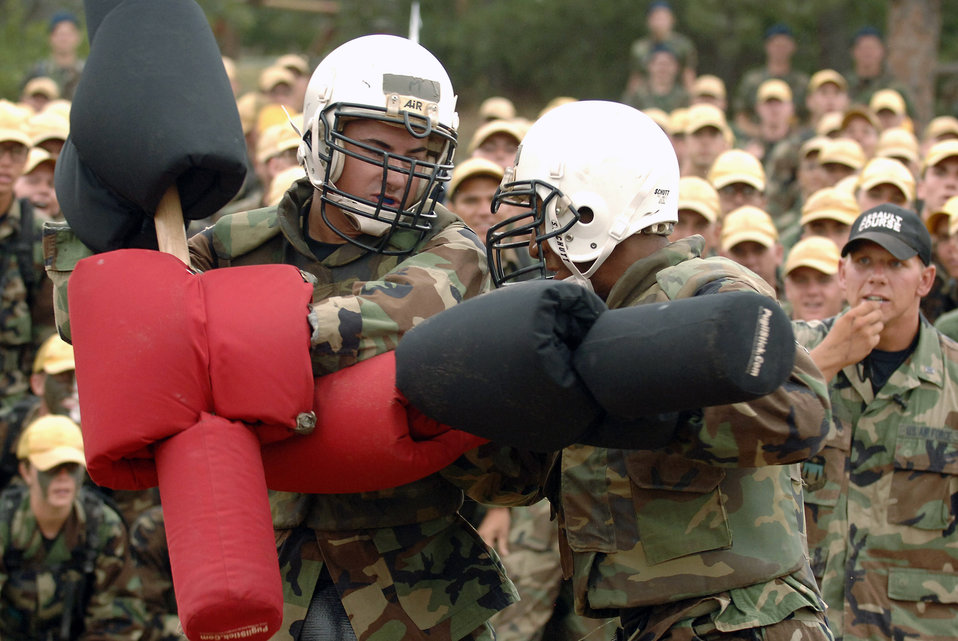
Academy seeks enlisted applicants

Cadet 4th Class Griffin Biscone (left) puts up a fight during the Big Bad Basic competition July 28 in Jacks Valley at the U.S. Air Force Academy in Colorado. Cadet Biscone is a prior-enlisted cadet who received an appointment to the Academy through the Leaders Encouraging Airman Development program, which allows 135 enlisted Airmen each year to attend the Academy. Enlisted Airmen interested in attending the Academy this entry year must submit completed forms no later than Jan. 31.